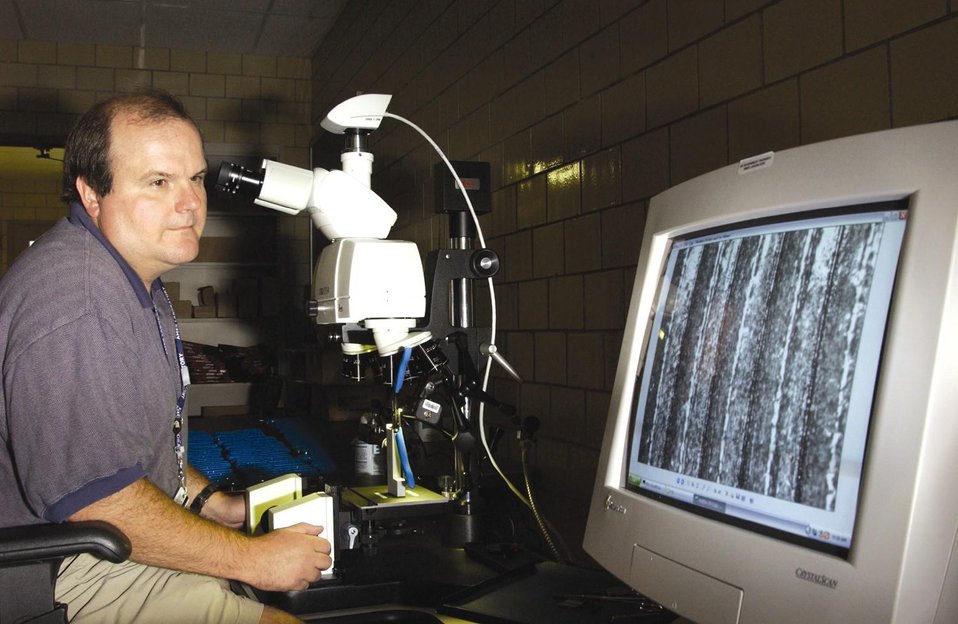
AMES TECHNICIAN OBSERVING A UNIQUE TOOLMARK EMBEDDED IN THE SURFACE OF AN ORDINARY PAIR OF PLIERS USED IN A FORENSIC STUDY.

A FORENSIC COMPARISON MICROSCOPE IS USED TO CAPTURE DIGITAL IMAGES OF TOOLMARKS, WHICH ARE ENTERED INTO A DATABASE. FORENSIC EXPERTS CAN USE THE DATABASE TO IDENTIFY TOOLMARKS PRODUCED ON A TOOL THROUGH DIFFERENT MANUFACTURING PROCESSES. IT IS KNOWN IN THE FORENSIC COMMUNITY THAT DURING THE MANUFACTURING PROCESS OF TOOLS, SUCH AS SCREWDRIVERS, PLIERS, OR WIRE CUTTERS, MARKS ARE EMBEDDED ON THEIR SURFACES, MAKING PATTERNS THAT RENDER EACH TOOL UNIQUE.